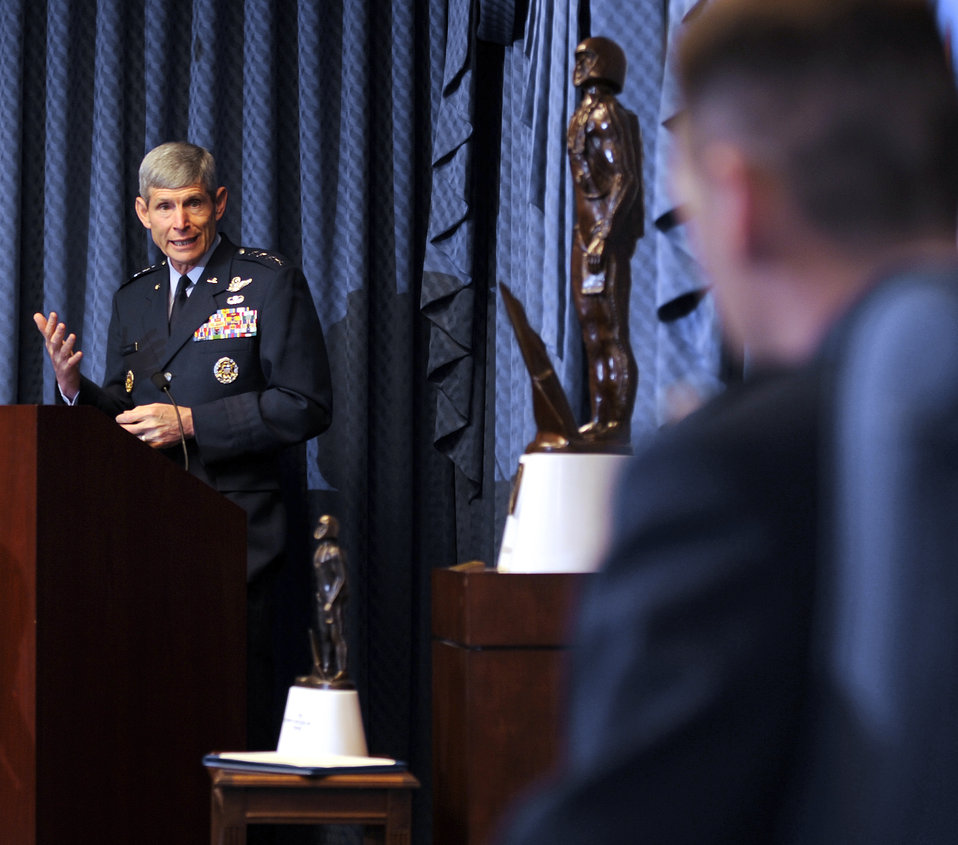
Air Force U-2 pilot receives top safety award

Air Force Chief of Staff Gen. Norton Schwartz addresses Lt. Col. Joseph Santucci and attendees at the Kolligian trophy presentation June 1, 2010, at the Pentagon. Colonel Santucci was presented with the prestigious safety award for his efforts in safely landing a U-2 that experienced an in-flight emergency at 52,000 feet. Colonel Santucci is the 99th Reconnaissance Squadron commander at Beale Air Force Base, Calif.